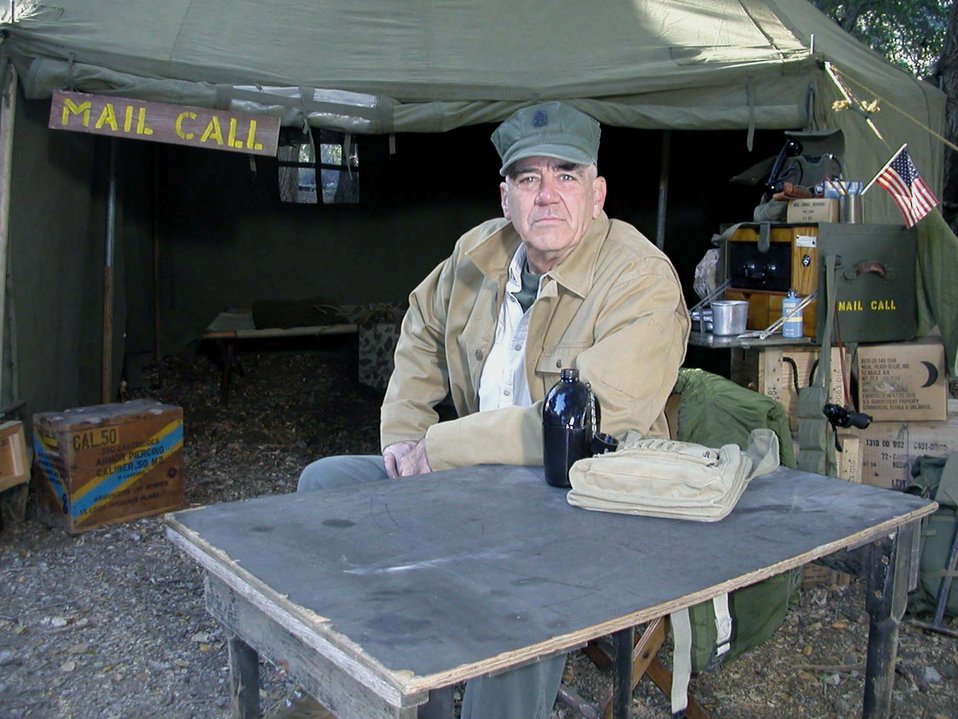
Mail call!

SANTA CLARITA, Calif. -- Retired Honorary Gunnery Sgt. R. Lee Ermey,